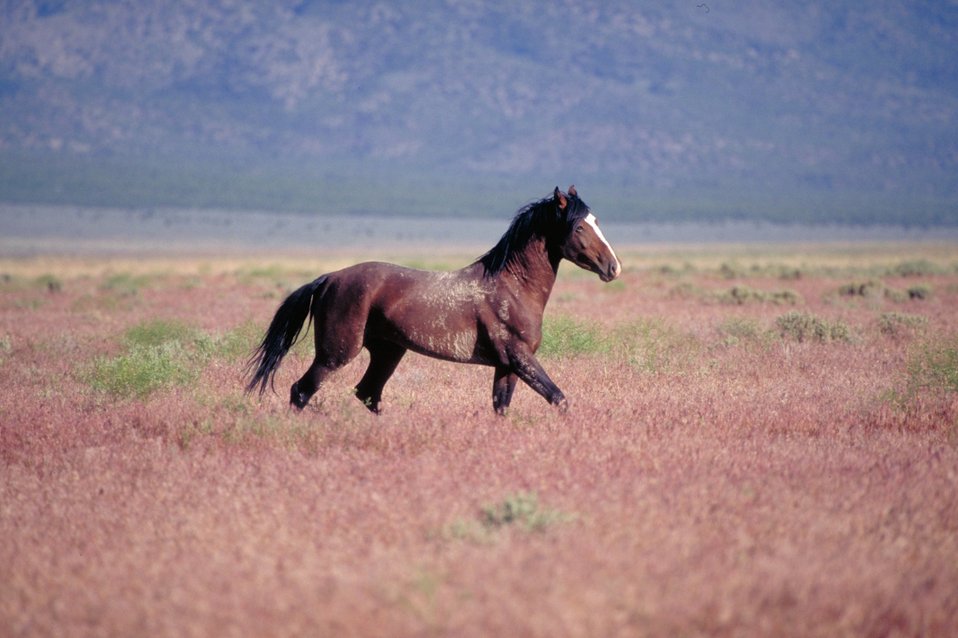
Onaqui Herd near Dugway, Utah.